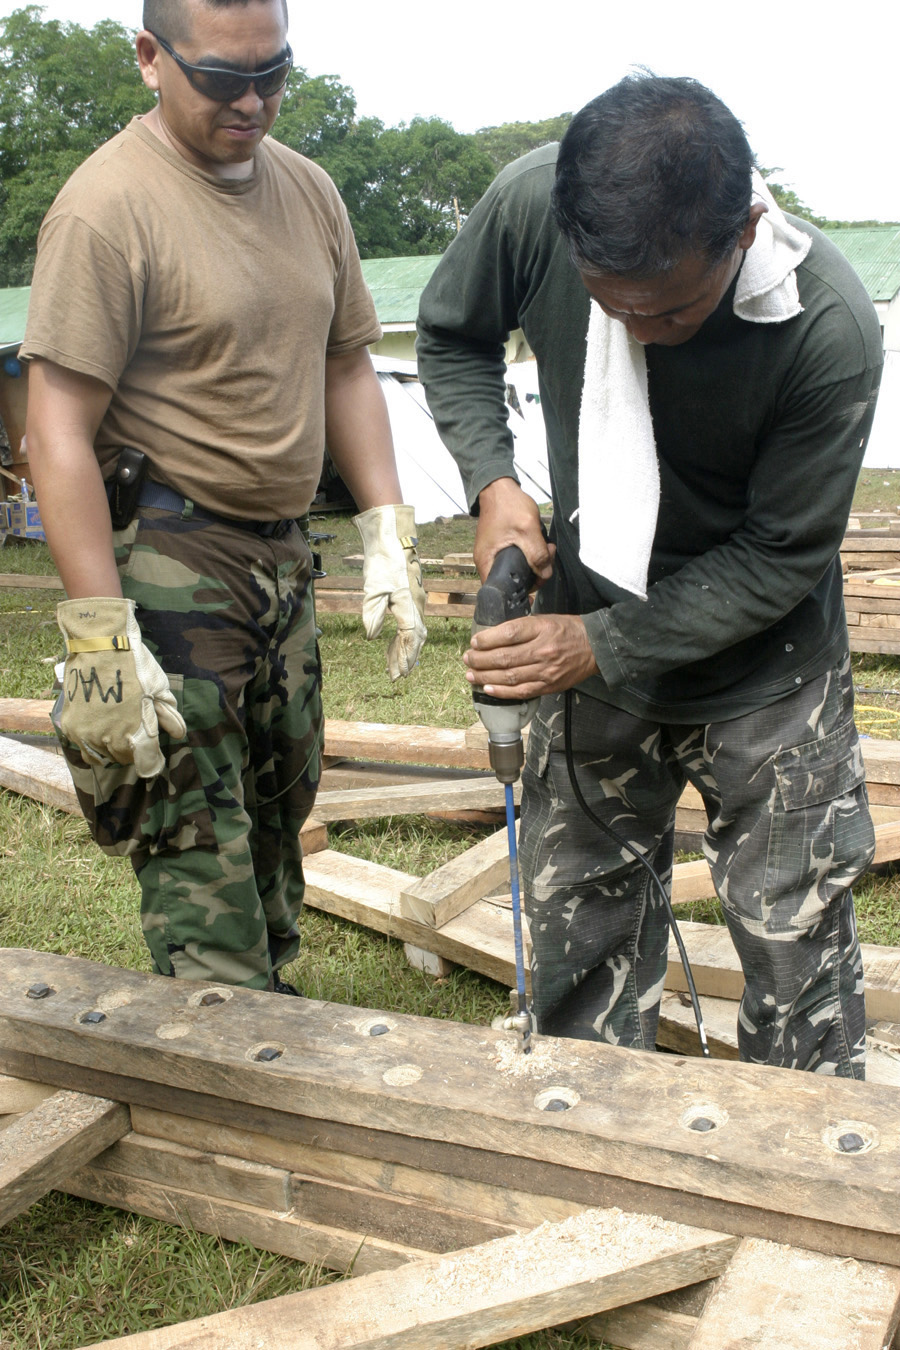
Balikatan 2006

JOLO, Philippines (AFPN) -- An Armed Forces of the Philippines engineer and an Airman work at the construction site of a three-room school, an addition to the existing Sulu High School, Feb. 20. This is one of several civil action programs taking place during Exercise Balikatan 2006.